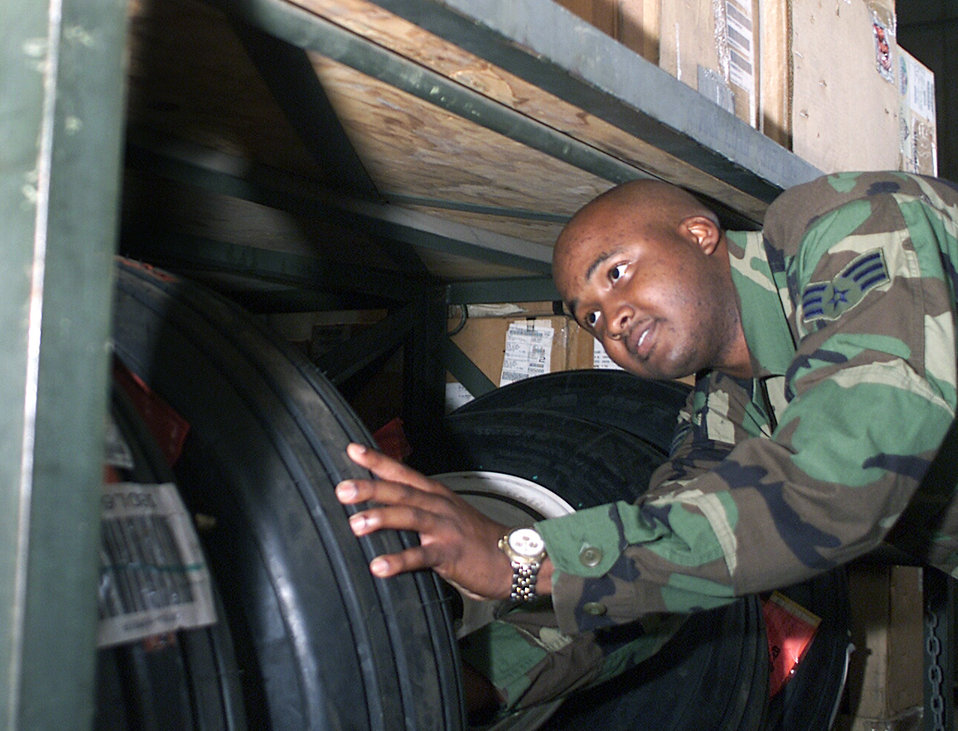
Hurricanes, home, mission focus of Gwangju Airmen

GWANGJU AIR BASE, South Korea -- Senior Airman Dominick Jamison inspects a tire at the supply warehouse Sept. 15. He is one of more than 100 people here whose family and friends were affected by hurricanes Charley, Frances and Ivan. Airman Jamison is a 3rd Air Expeditionary Logistics Readiness Squadron supply craftsman.